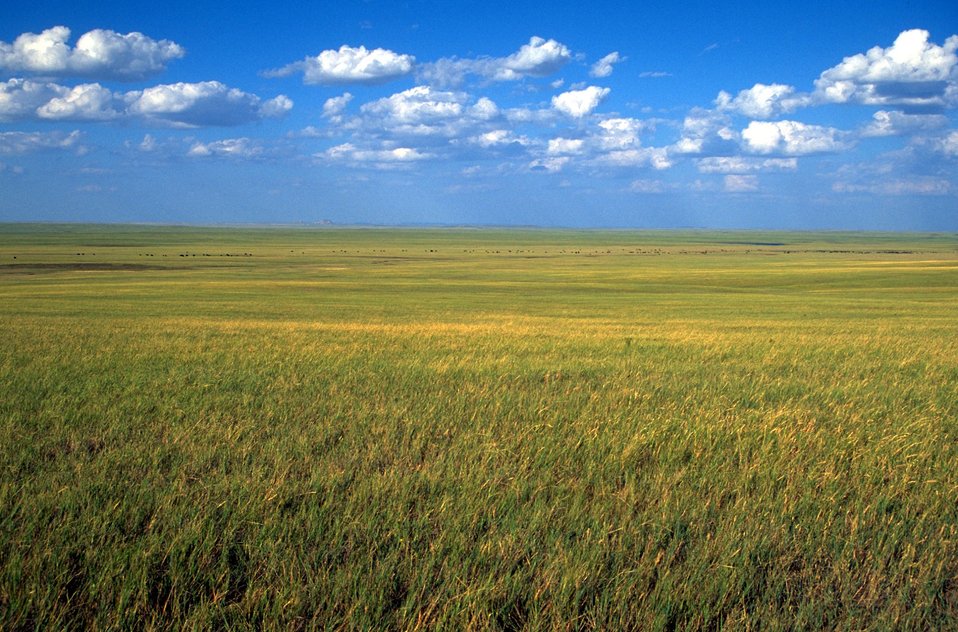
Grassland 40 miles north of Belle Fourche